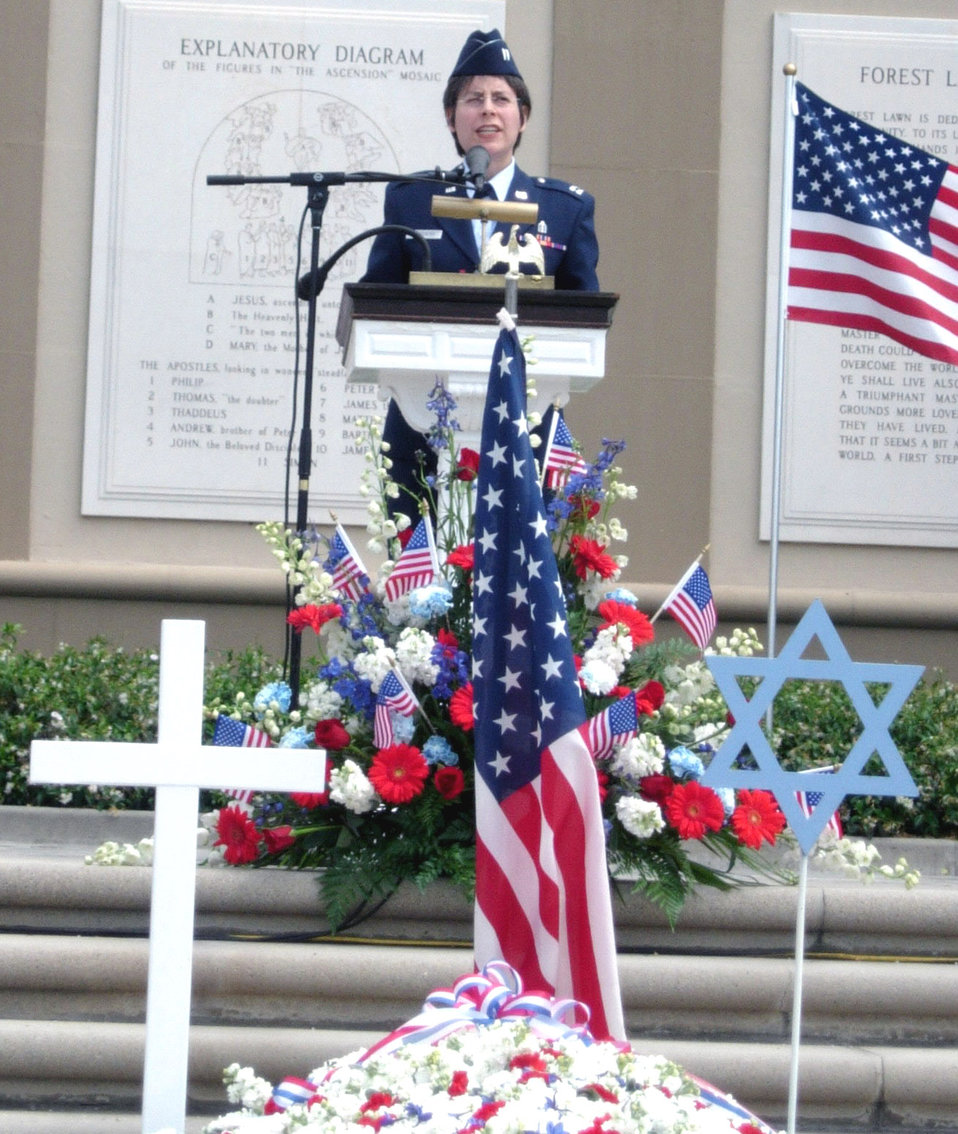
Air Force rabbi speaks at Memorial Day observance

CYPRUS, Calif. -- Chaplain (Capt.) Sarah Schechter speaks to a crowd of more than 1,000 people at a Memorial Day ceremony here May 30. Chaplain Schecter, who became the Air Force's first female rabbi in 2003, spoke about honor, sacrifice and freedom of religion. She is stationed at nearby Los Angeles Air Force Base.